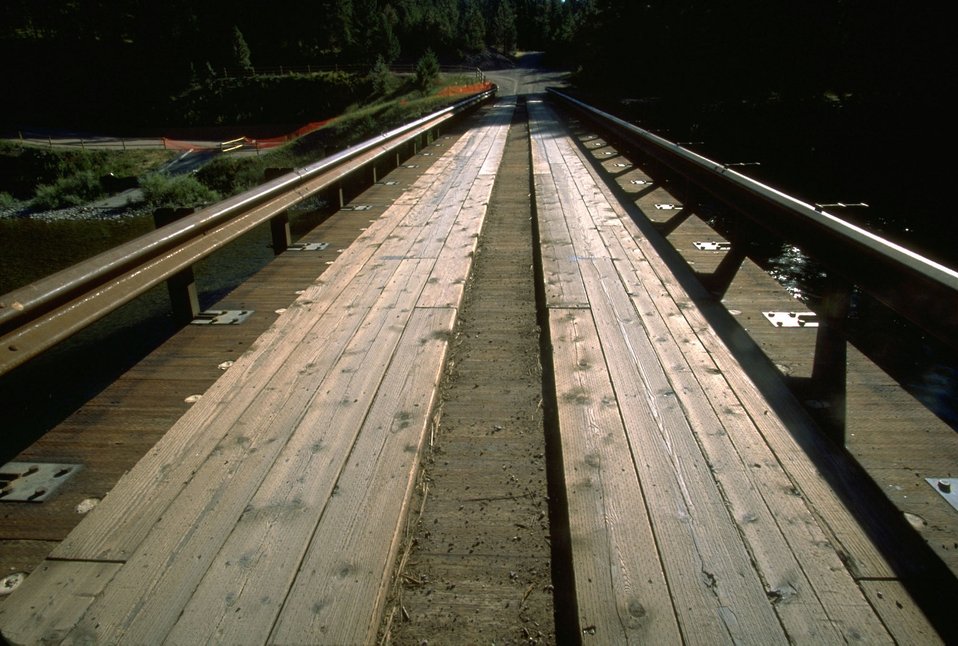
Whitaker Bridge across Blackfoot River